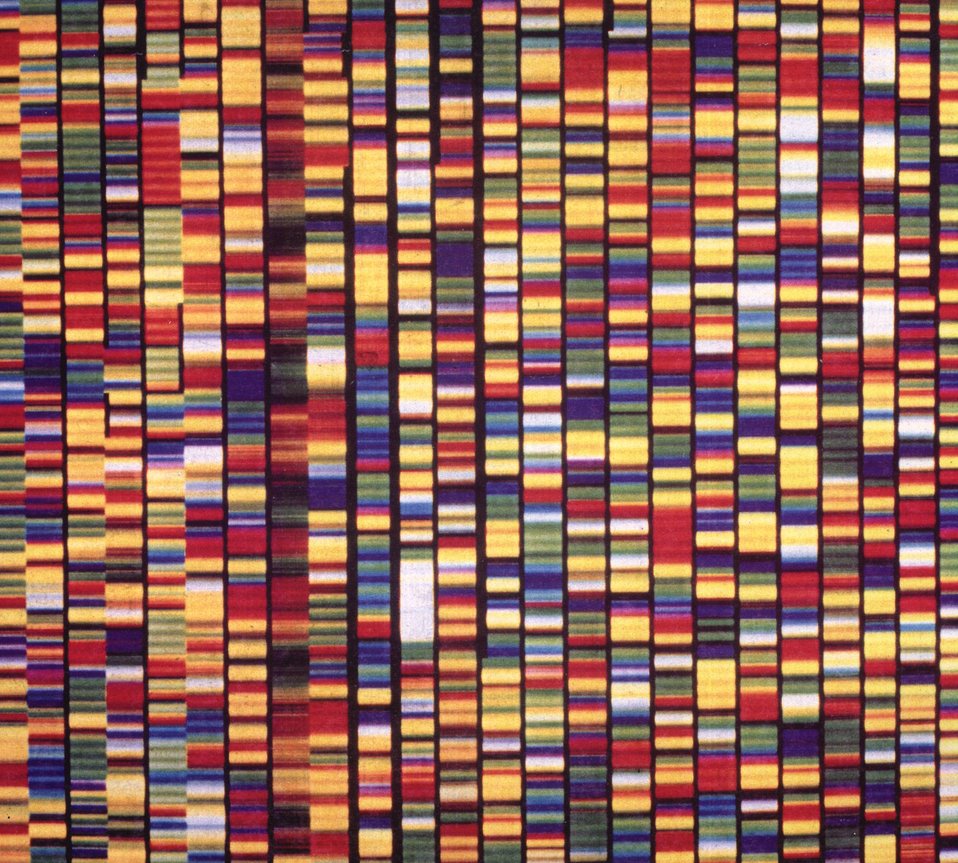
This is an image from an Applied Biosystems Model 373A DNA Sequencer after digital processing and enhancement. Each of the 24 vertical lanes represents a different DNA sample.